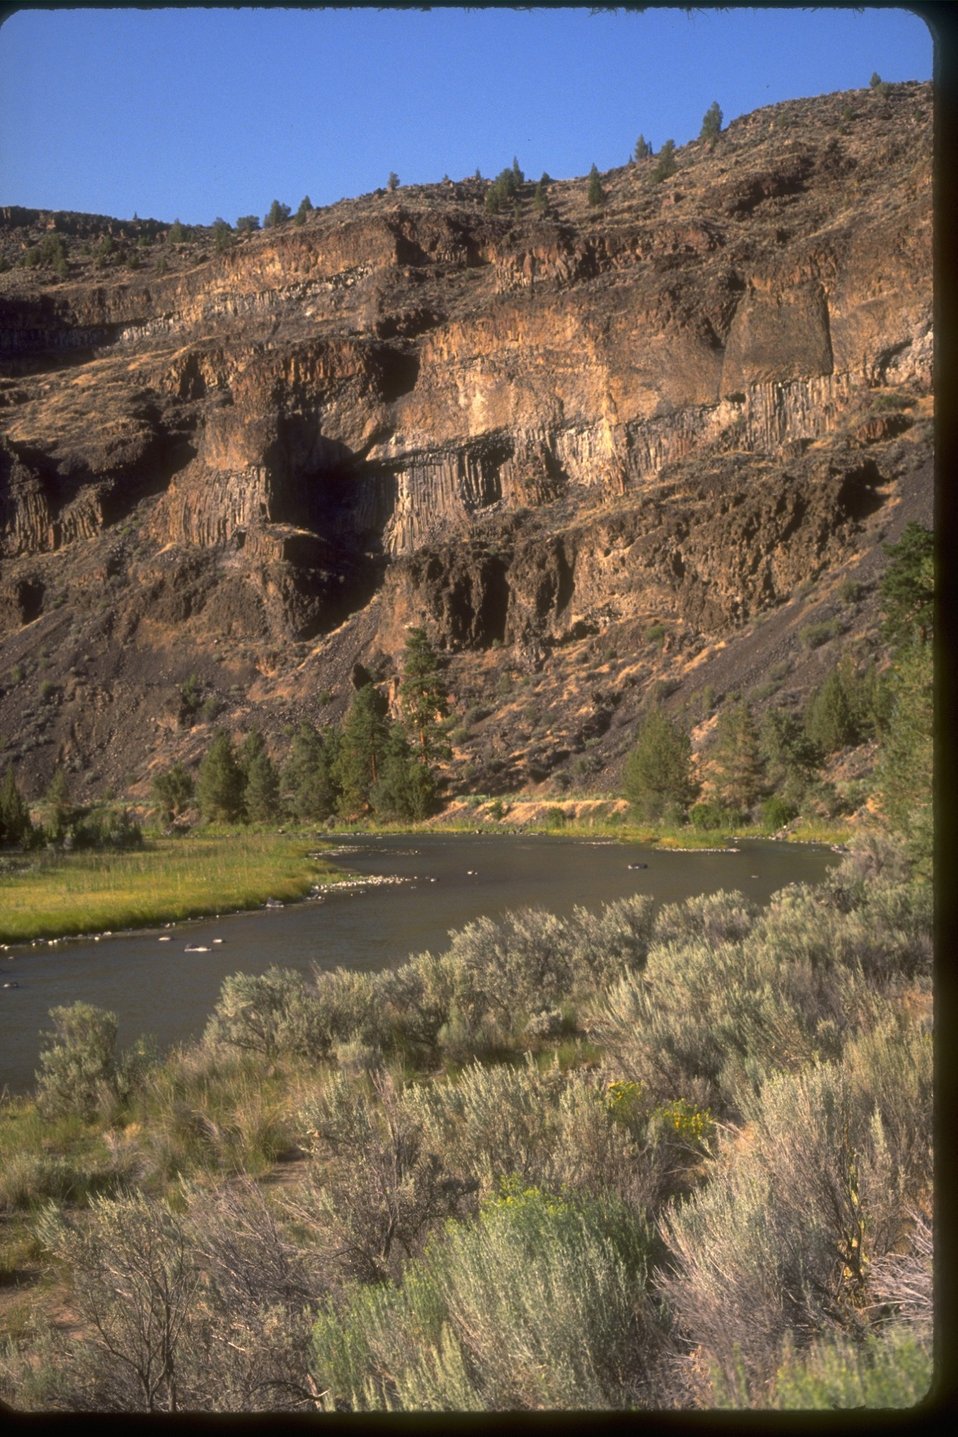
Crooked River running along cliff.